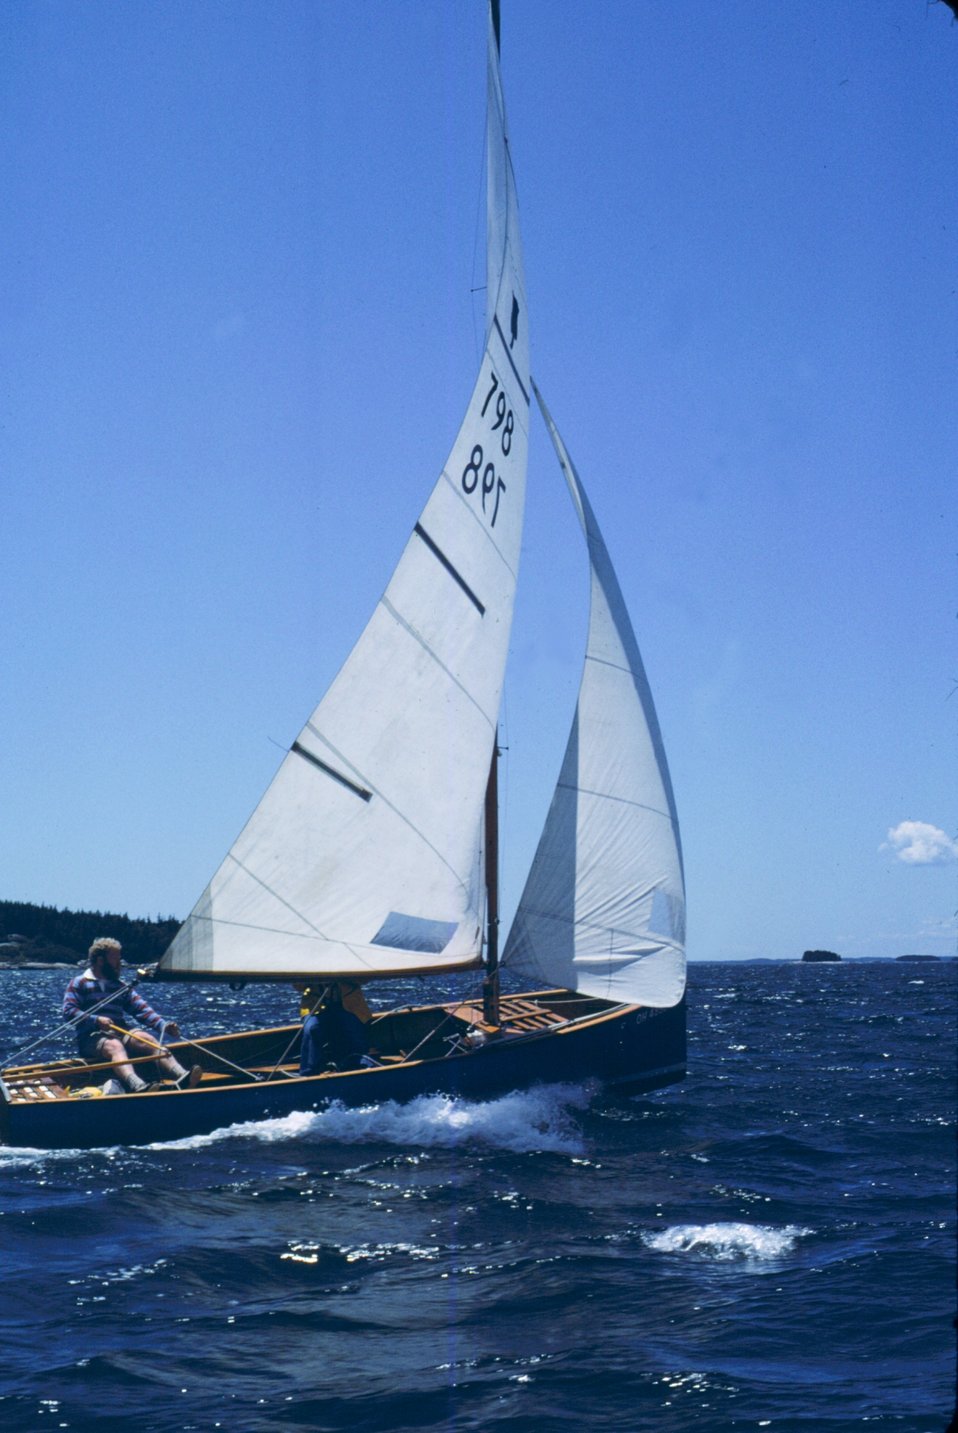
Sailing in Penobscot Bay in Thistle class sailboat.